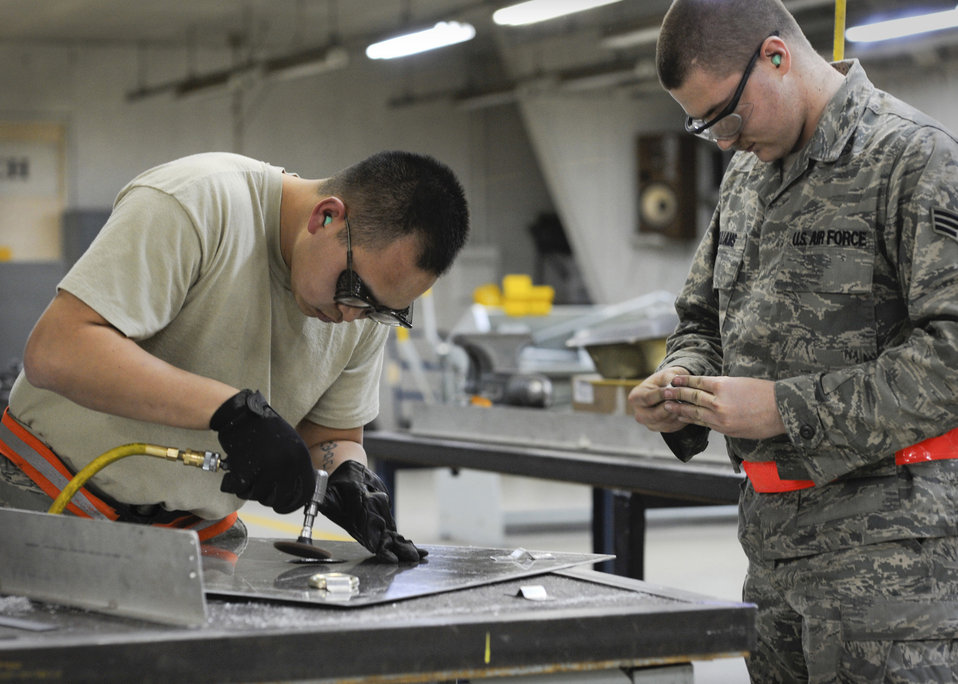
374th MXS aids Tomadachi

Senior Airmen Thompson Kongmany and Mark Williams create a camera mount March 28, 2011, at Yokota Air Base, Japan. Maintainers were tasked to create a mount for equipment to monitor radiation levels near reactors at the Fukushima nuclear plant. Kongmany and Williams are 374th Maintenance Squadron metal technicians.